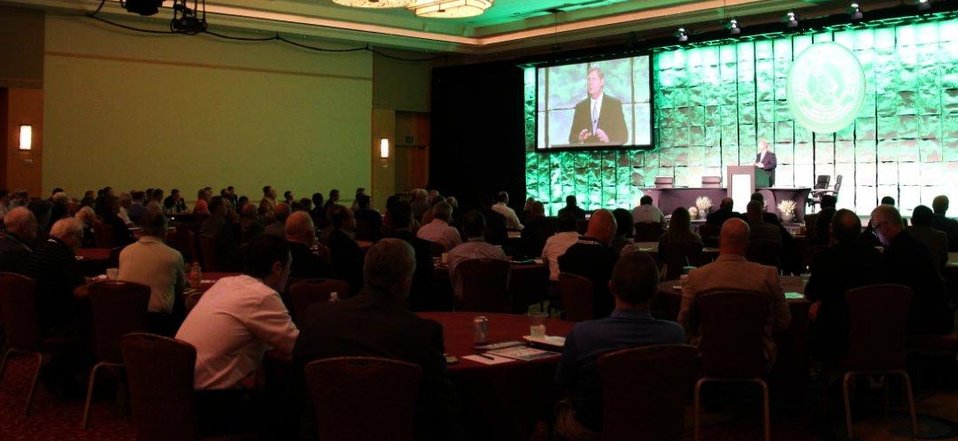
Agriculture Secretary Tom Vilsack speaks at the fifth annual executive leadership conference 'Taking it to the Streets' at the JW Marriott Desert Ridge Hotel in Phoenix, AZ on Feb. 27, 2014.